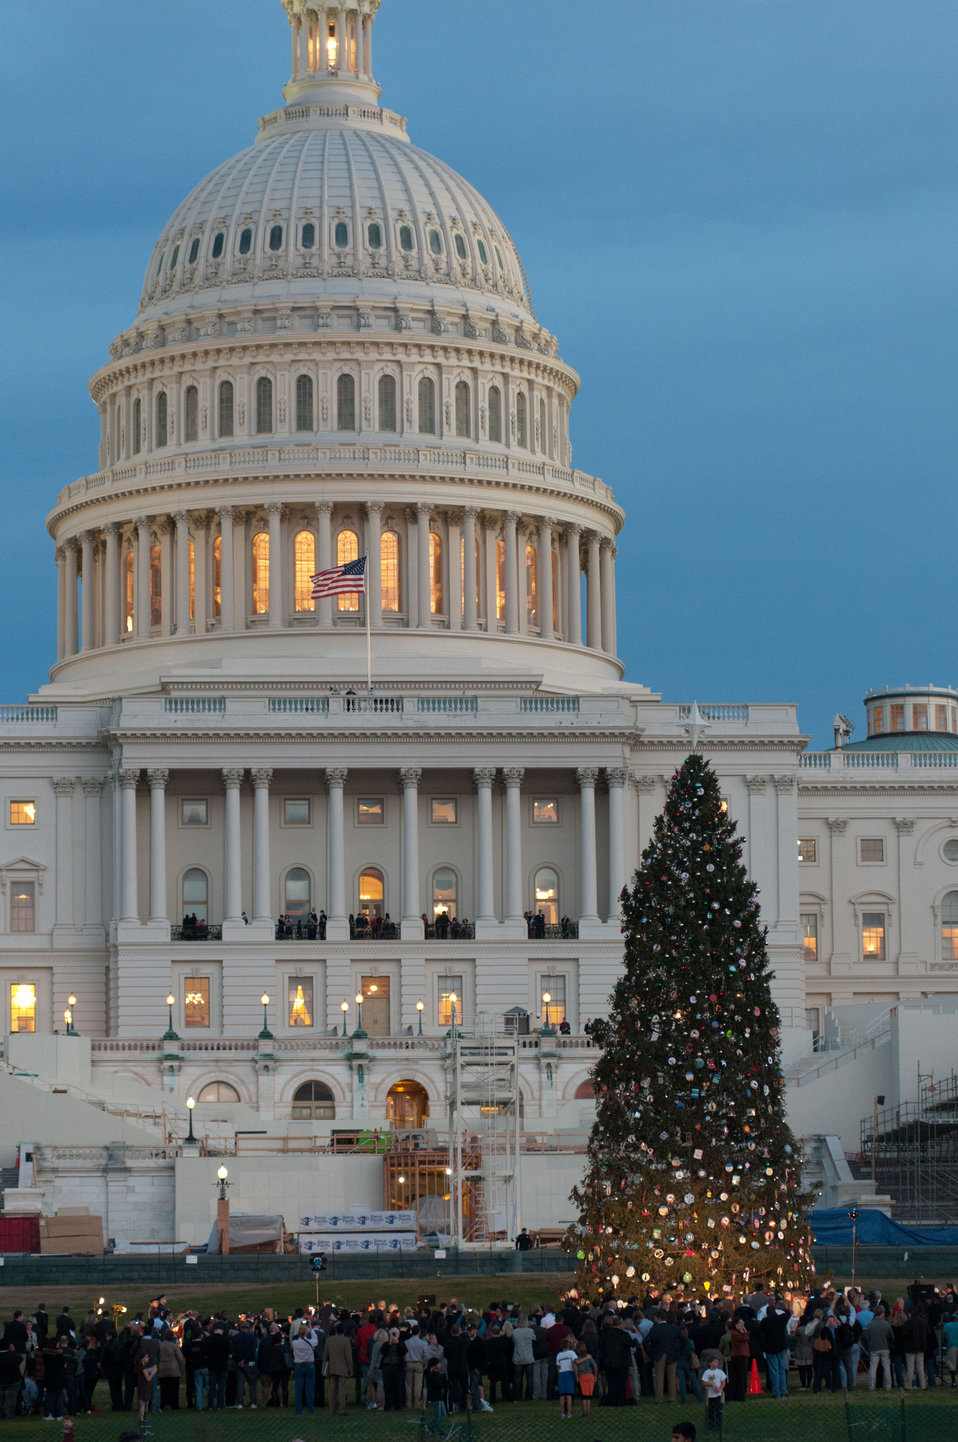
The lights of the 2012 U.S. Capitol Christmas Tree from the Blanco Ranger District of the White River National Forest near Meeker, CO; and decorated with hand-made ornaments, will be switched on by Colorado Springs high school student Ryan Shuster and House Speaker John Boehner, on Tuesday, Dec. 4, 2012 at the U.S. Capitol in Washington, D.C. Since November, the tree visited dozens of cities across the country as it made its way arriving here on Nov.26, 2012. The 73-foot Englemann spruce traveled from the White River National Forest in Colorado. Other representatives as well as Natural Resources and Environment Under Secretary Harris Sherman spoke during the ceremony.